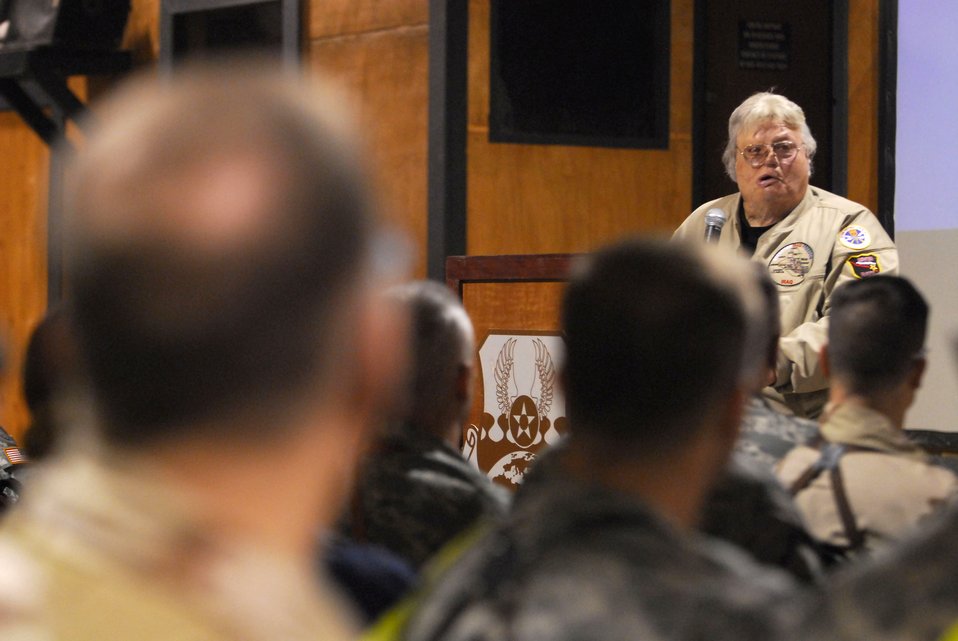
Veteran hope

Inspirational speaker and disabled Vietnam War veteran Dave Roever shares his life story with servicemembers Nov. 26 at Balad Air Base, Iraq. Mr. Roever was injured by a phosphorous grenade while serving in the Navy during Vietnam. He uses his experiences overcoming obstacles to inspire audiences around the world.